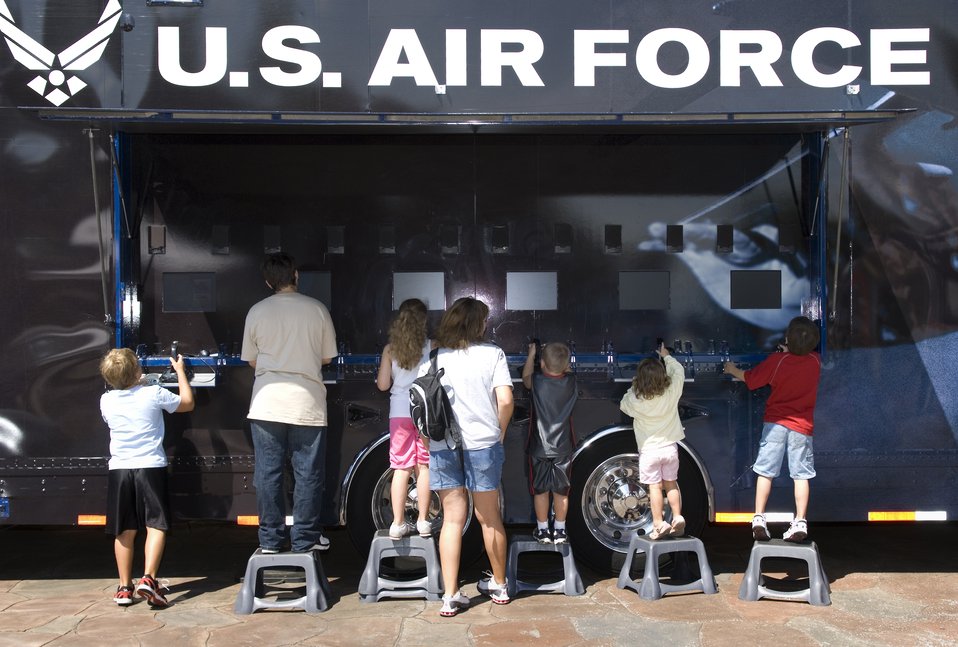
Air Force Week in the Heartland reaches out to Omaha zoo

Visitors use the Do Something Amazing video simulators during Air Force Week in the Heartland Aug. 12 at the Henry Doorly Zoo in Omaha, Neb. Zoo visitors had a chance to see an F-16 Fighter Falcon, a motion simulator, video simulators and Air Force Honor Guard drill team performances.